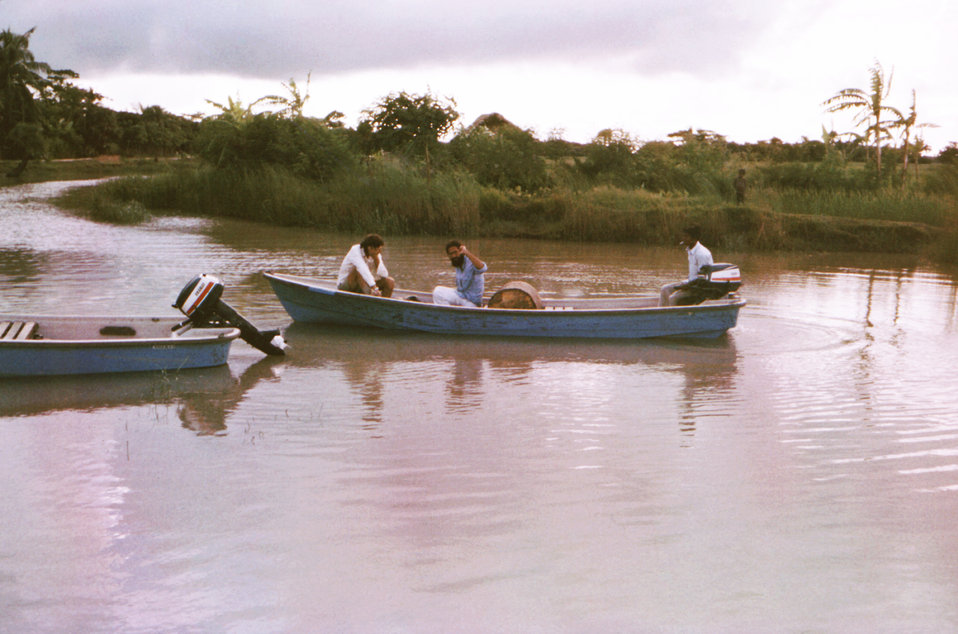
This image depicted Swedish-based Dr. Harald Heijbel (Lt.), and 'Smallpox Eradication Program Area Coordinator', Dr. Jason Weisfeld (U.S.A.), wearing his blue shirt, as they were leaving the Lord Hardinge Bazaar in a 'speedboat'.